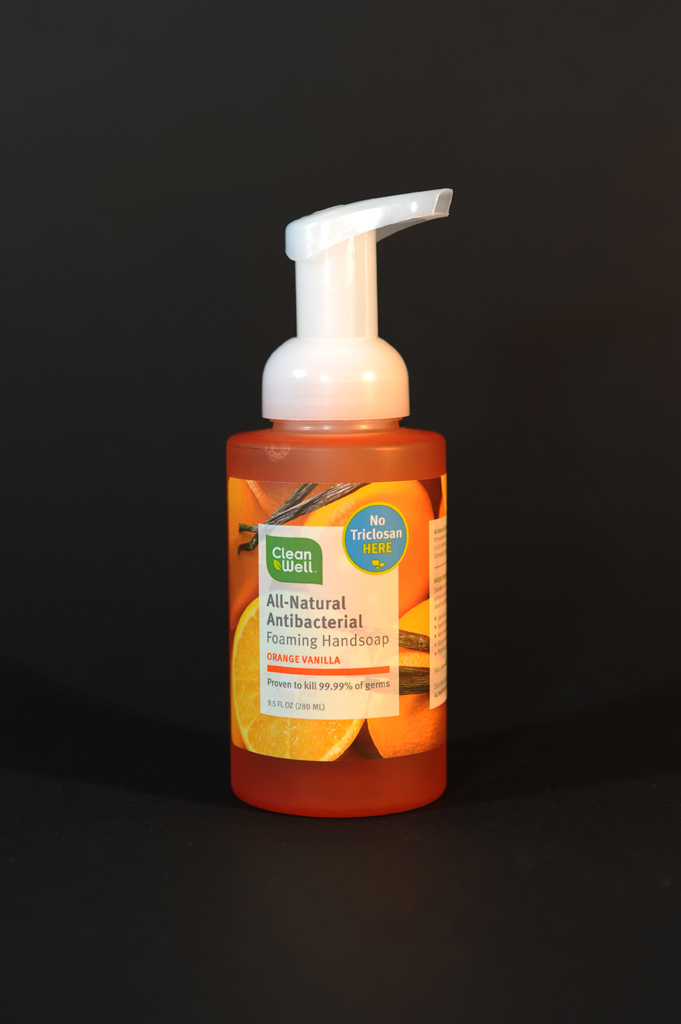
Hand Sanitizers Carry Unproven Claims to Prevent MRSA Infections - Product Photo

The claims on this product that it prevents serious infections violate federal regulations, says FDA. The agency has warned the company to correct the violations or risk being subject to legal action. Read this FDA Consumer Update: www.fda.gov/ForConsumers/ConsumerUpdates/ucm251816.htm